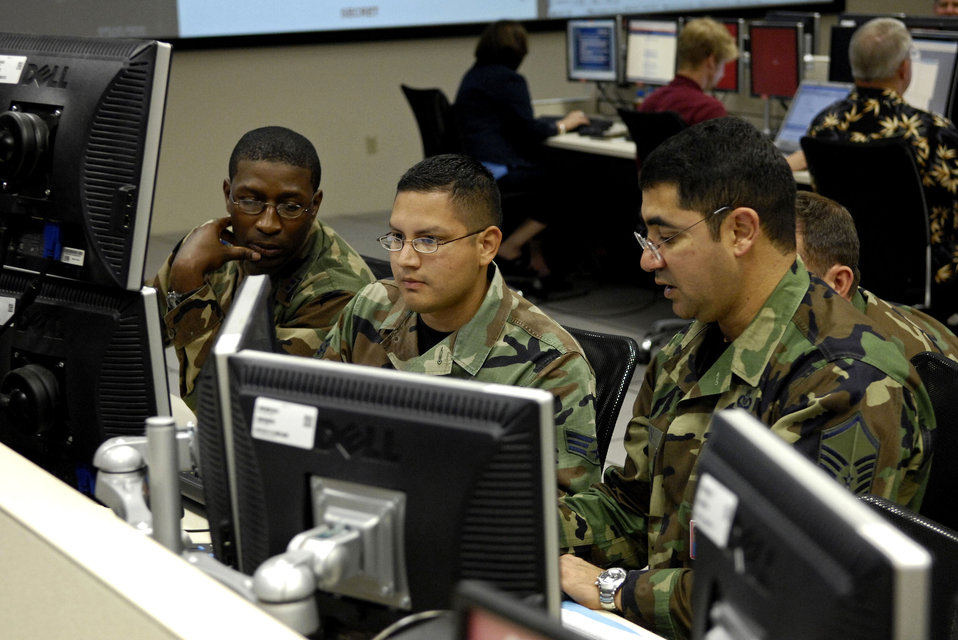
Ops center commands sky during Exercise Valiant Shield

Members of the personnel recovery coordination cell discuss a downed pilot recovery mission during Exercise Valiant Shield Aug. 7 in the Air and Space Operation Center at Hickam Air Force Base, Hawaii. The Airmen are from the 613th Air Operations Center. Valiant Shield is a week-long exercise that tests the military's ability to rapidly consolidate joint forces in response to regional contingencies, involves approximately 22,000 troops, 30 ships and some 275 aircraft.